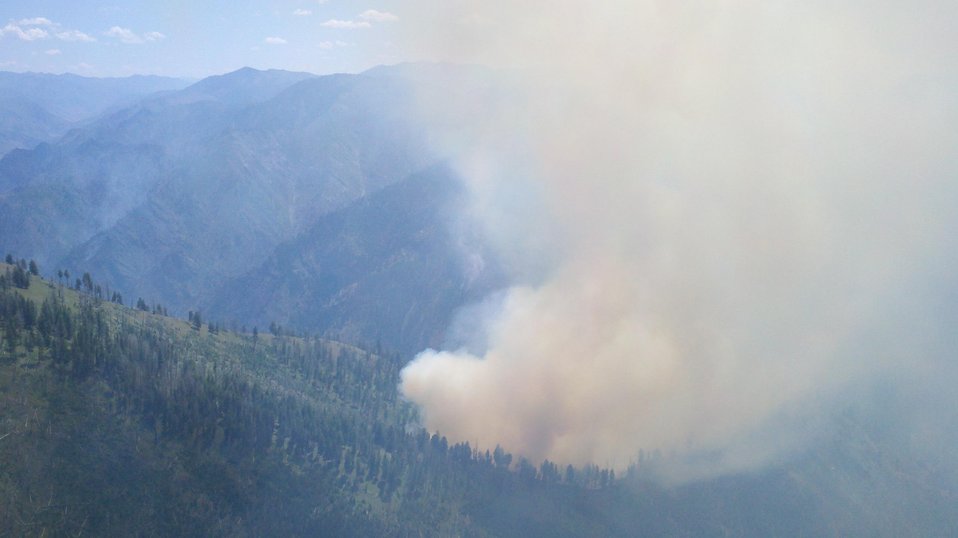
The Papoose Fire in the Salmon-Challis National Forest in Idaho began on Jul. 8, 2013 by lightning has consumed approximately 6, 504 acres.